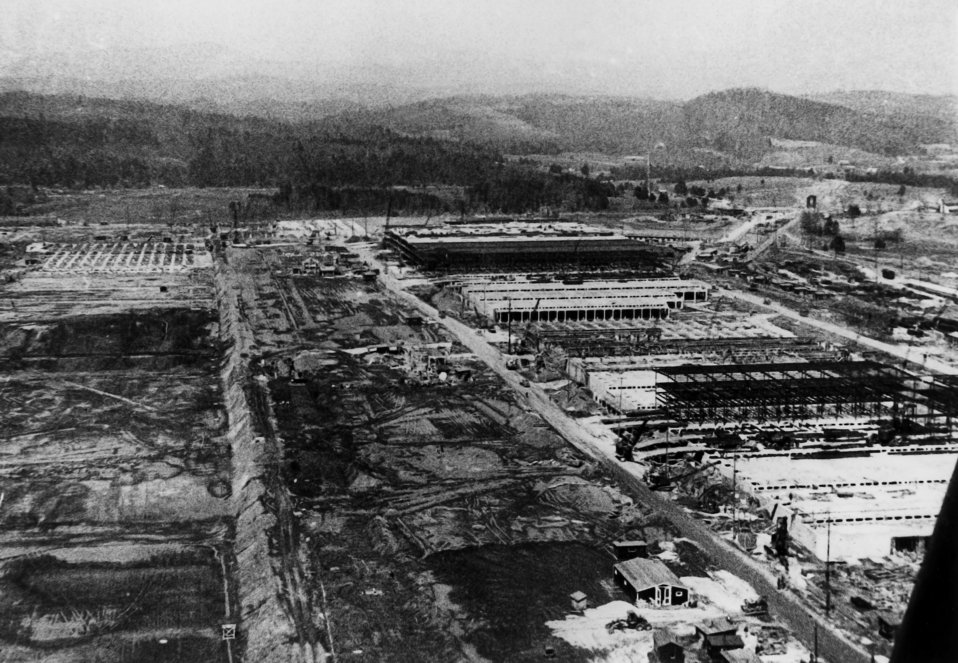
Construction Progress K-25 Oak Ridge

206-1 DOE photo by Ed Westcott 3/10/44
Oak Ridge Tennessee